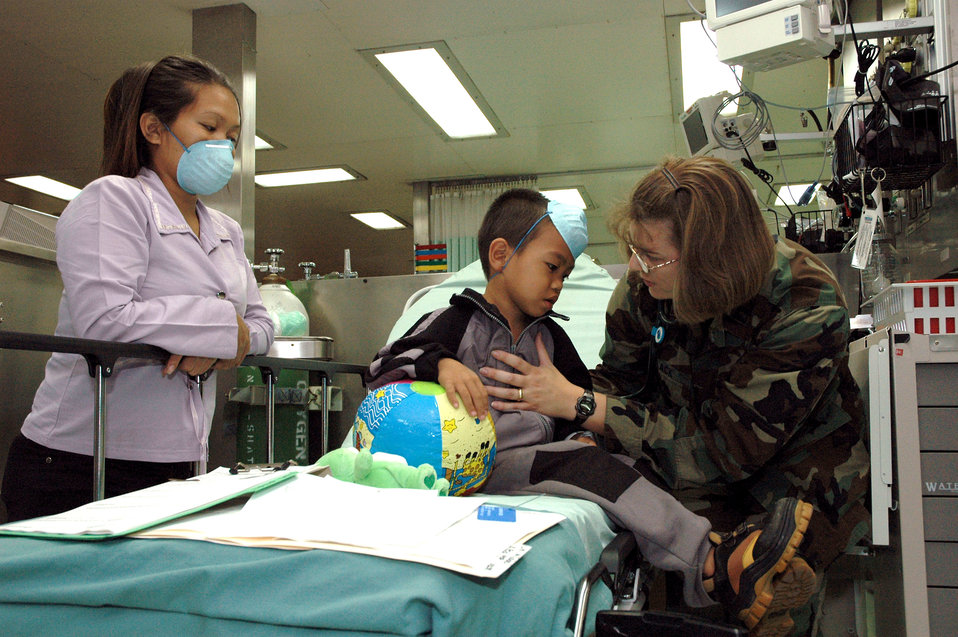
Aboard the USNS Mercy

Capt. Gretchen Black comforts a patient in the casualty receiving ward aboard the U.S. Navy hospital ship, USNS Mercy, while anchored off the city of Zamboanga, Philippines, on Friday, May 26, 2006. The crew is conducting humanitarian and civic assistance in South and Southeast Asia and the Pacific Islands. Captain Black is one of several Air Force medical professionals on the ship.